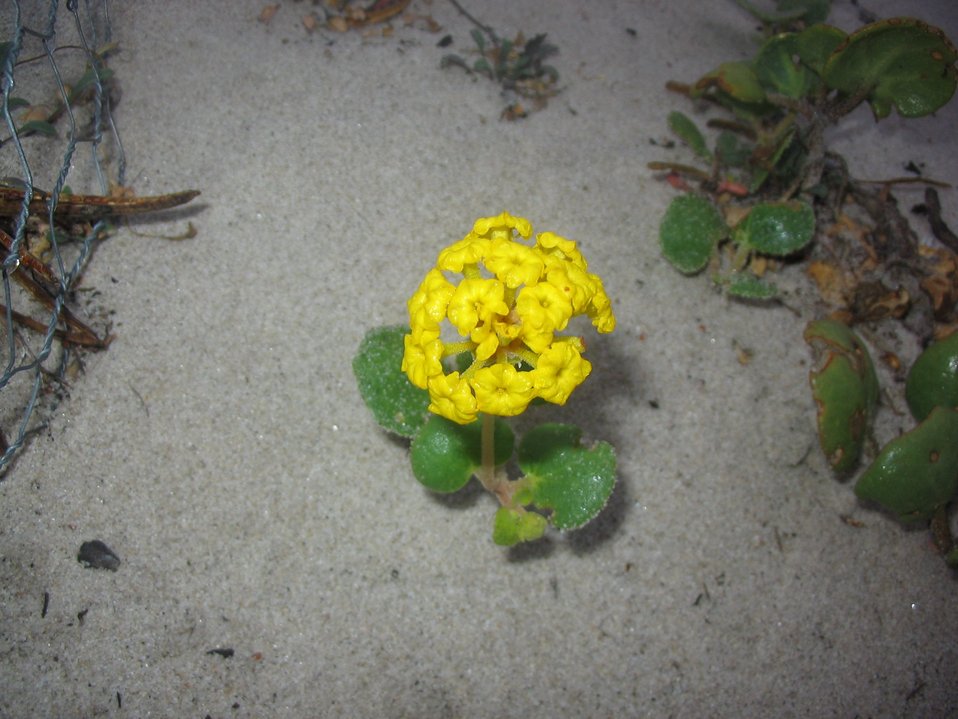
Menzies wallflower. This is an endangered species.